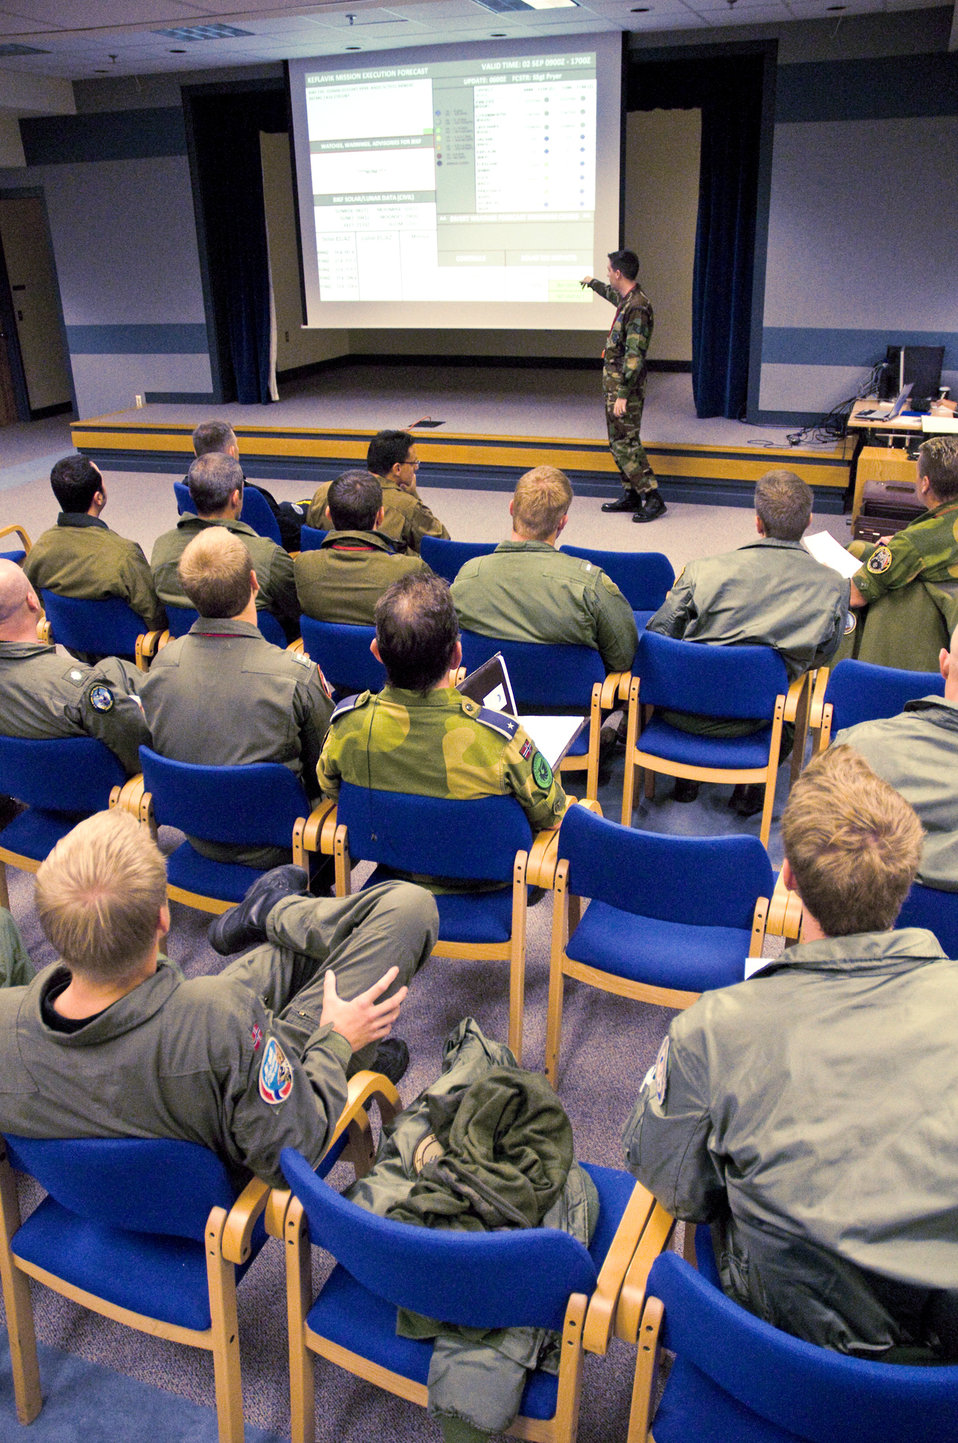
Multinational exercise sustains international readiness

Staff Sgt. Cody Pryer briefs pilots from the U.S., Norway, Denmark, Canada and NATO with weather information prior to their flights. He briefs information such as wave heights, for search and rescue reasons, cloud heights for refueling purposes and turbulence and thunderstorm information. The forces here are participating in the 2008 Northern Viking multinational exercise which is designed to hone the skills necessary to assist Iceland in its defense. Sergeant Pryer is a weather forecaster here deployed from the 48th Operations Support Squadron at Royal Air Force Lakenheath, England.